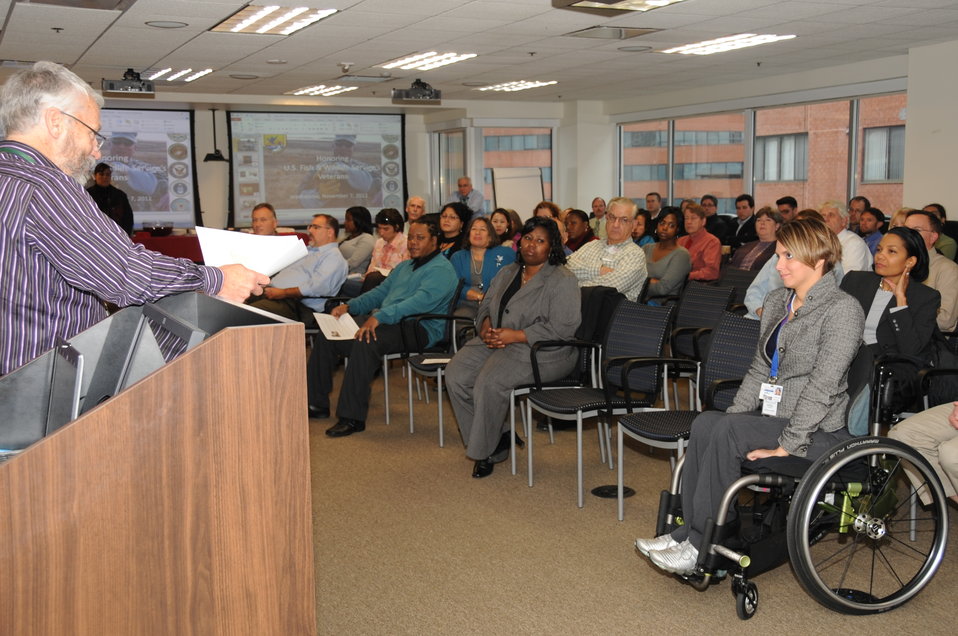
Honoring and Celebrating our Veterans

11.07.2012 Employees gathered in the Arlington Office to honor FWS Veterans